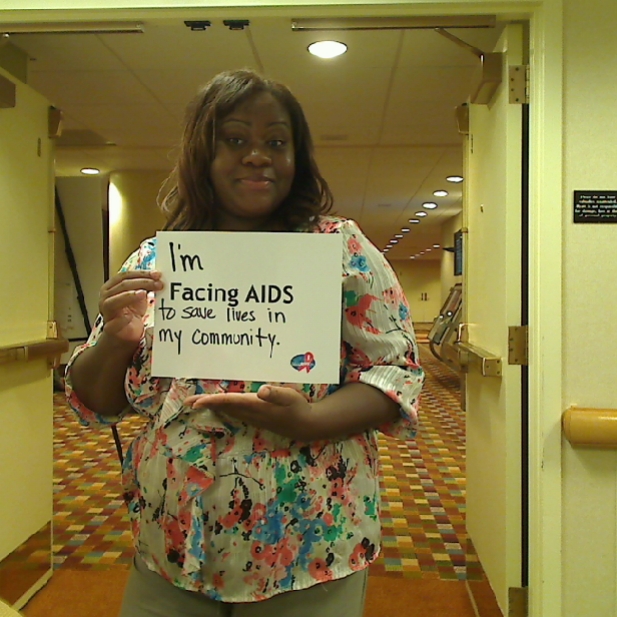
I'm Facing AIDS to save lives in my community.